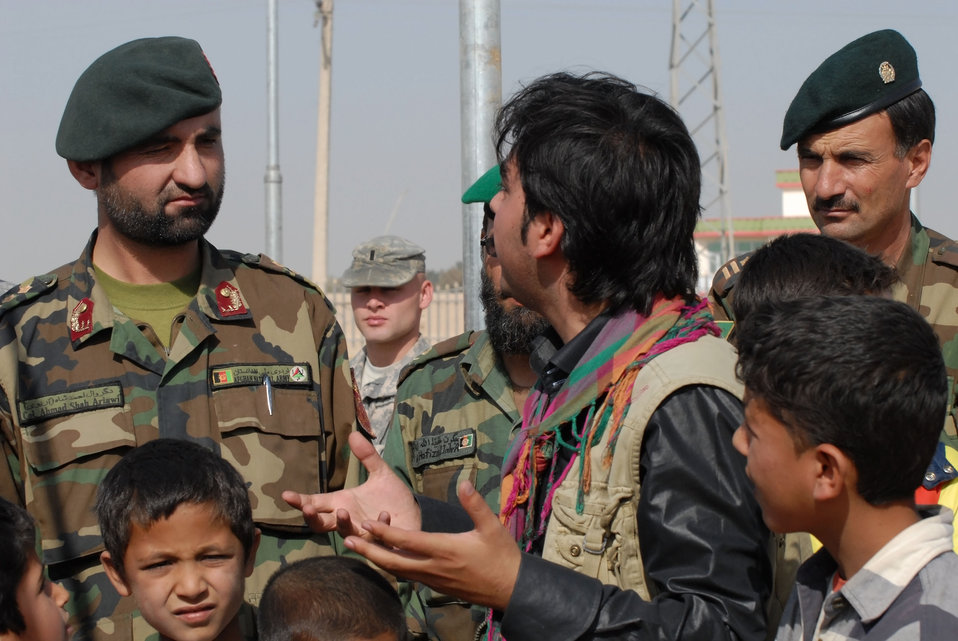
'On the Road' in Balkh Province